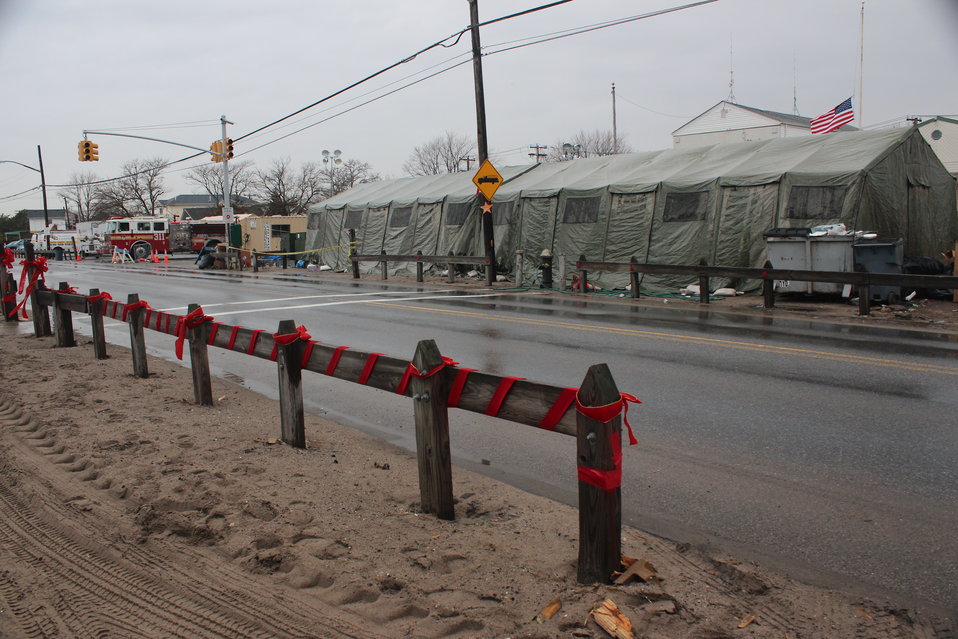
December 9, 2012 Community Relief Center at the Rockaway Point Fire Department

EPA went door to door in the hardest hit areas and worked with local authorities and community support centers to distribute information to affected residents.

Community relief areas served as donation centers for food (even for pets), clothing, cleaning and medical supplies. Other larger tents were set up throughout the area to providea place for rest and hot meals.